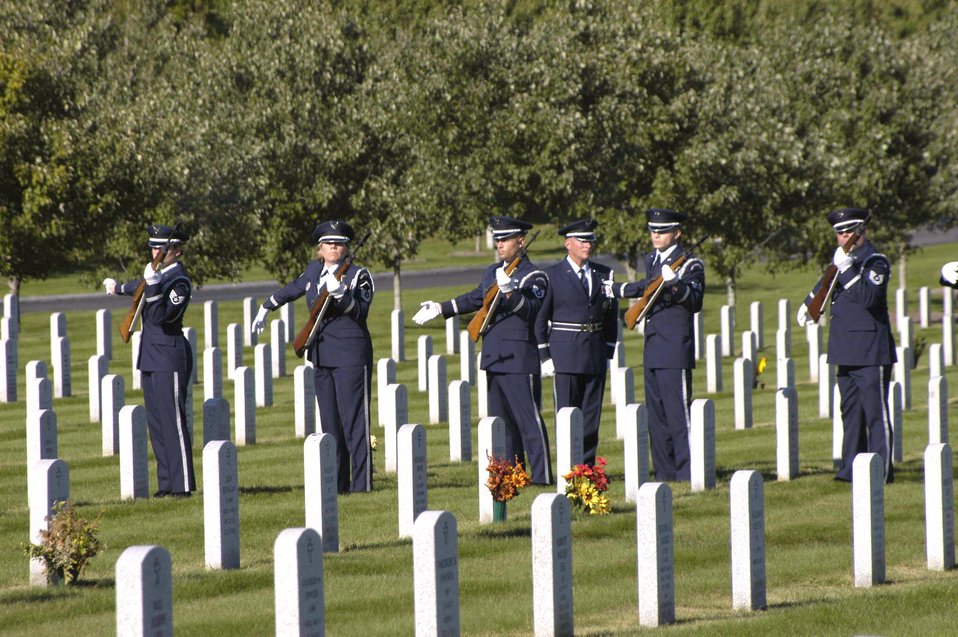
Airmen pay tribute to fallen guardsman

Airmen from the New York Air National Guard's 109th Airlift Wing Honor Guard perform a rifle salute during the funeral for Master Sgt. Joseph Longobardo Sept. 11. Sergeant Longobardo, a guardsman with the 109th Security Forces Squadron, was a New York State Police officer who was killed in the line of duty Sept. 3 while participating in the manhunt for fugitive Ralph